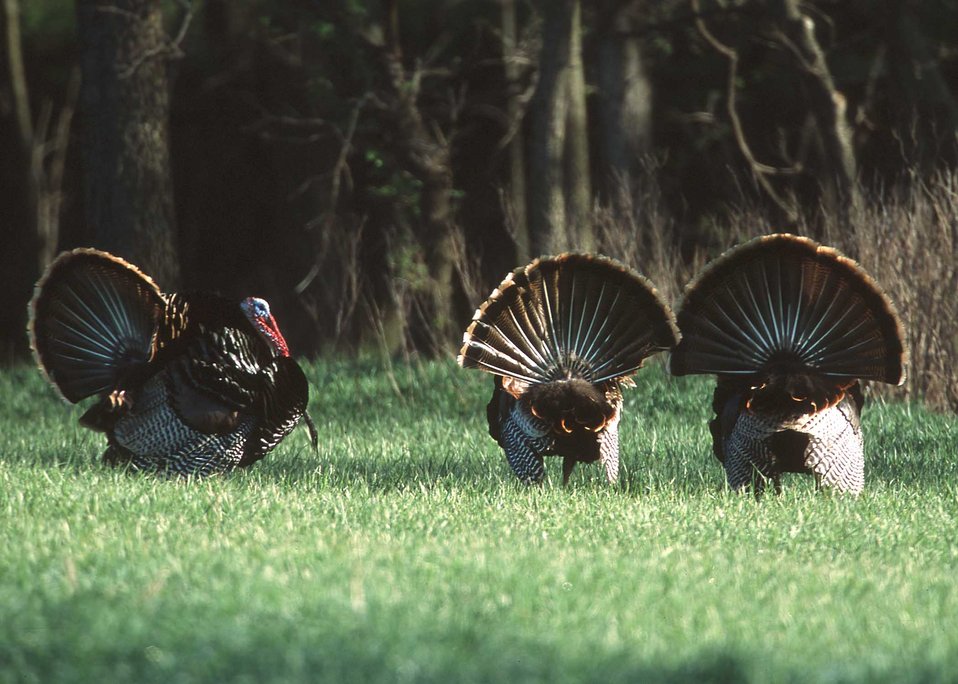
Male turkeys displaying at the edge of a wheat field in Manhattan, Kansas.